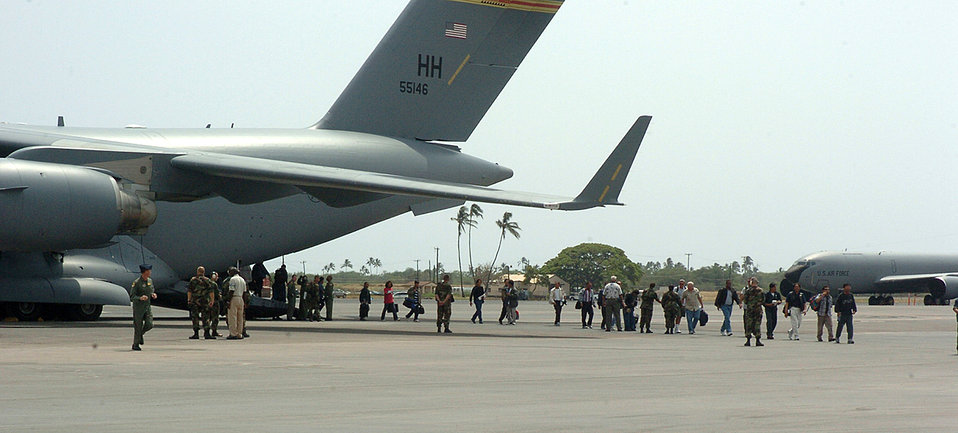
Wake Island evacuates

Wake Island evacuees exit a C-17 Globemaster III, at Hickam Air Force Base, Monday. The island's 188 people were evacuated prior to Super Typhoon Ioke reaching the tiny U.S. territory. Ioke is expected to hit the island around 8.p.m. EDT Wednesday.